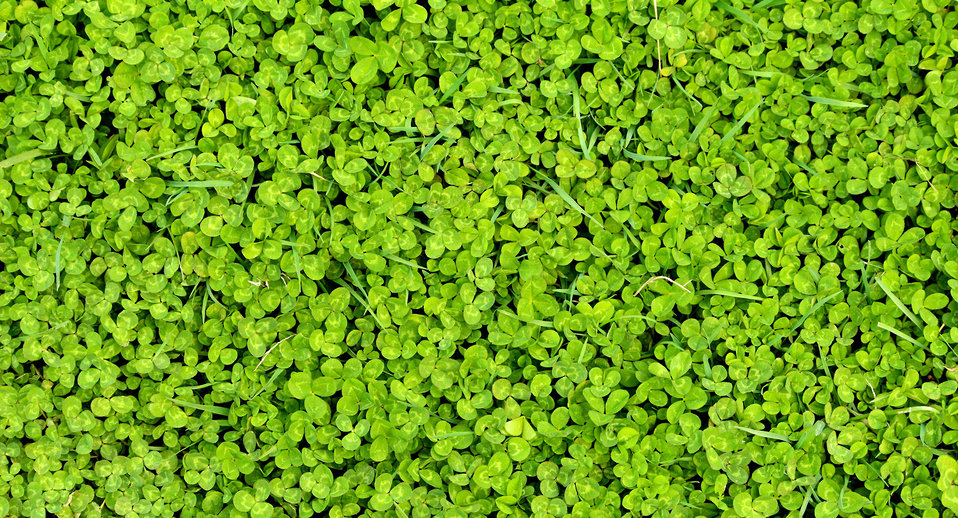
Clover background

Green clover background.